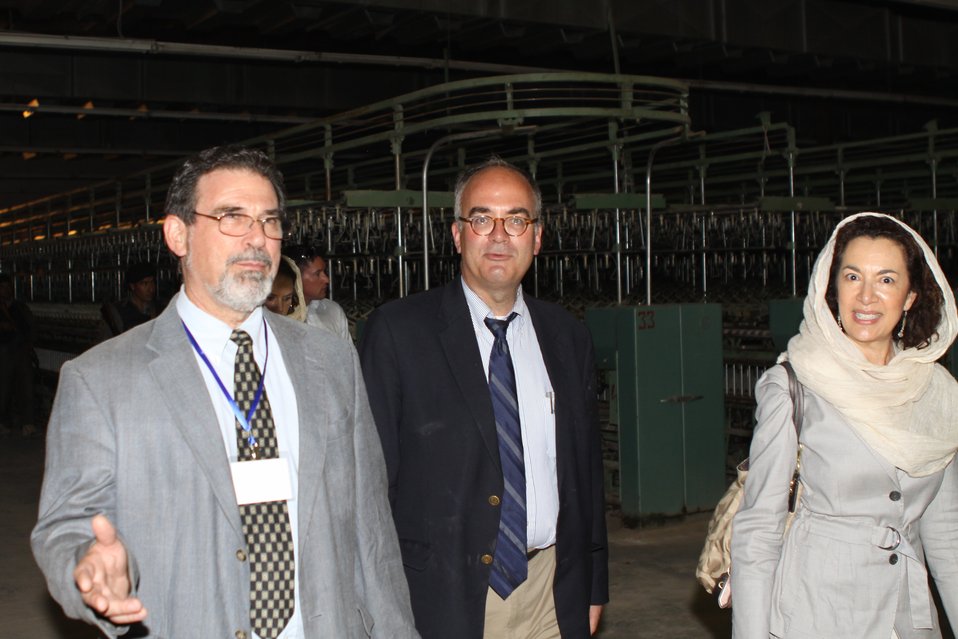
100525 Hirat Textile Company 777